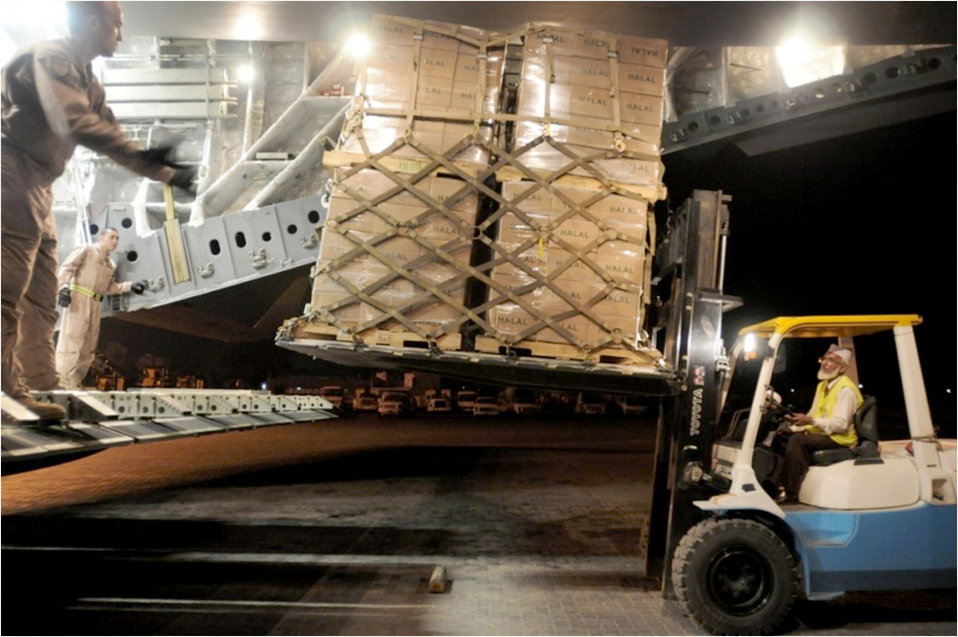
Teamwork provides relief

Airman First Class Christian Ruhe and Staff Sgt. Manuel Chacon guide Javed Iqbal, a Peshawar International Airport ramp supervisor, as he backs a pallet of halal meals out of a C-17 Globemaster III Aug. 2, 2010, in Peshawar, Pakistan. Airman Ruhe and Sergeant Chacon are both loadmasters assigned to the 817th Expeditionary Airlift Squadron at the Transit Center at Manas, Kyrgyzstan.